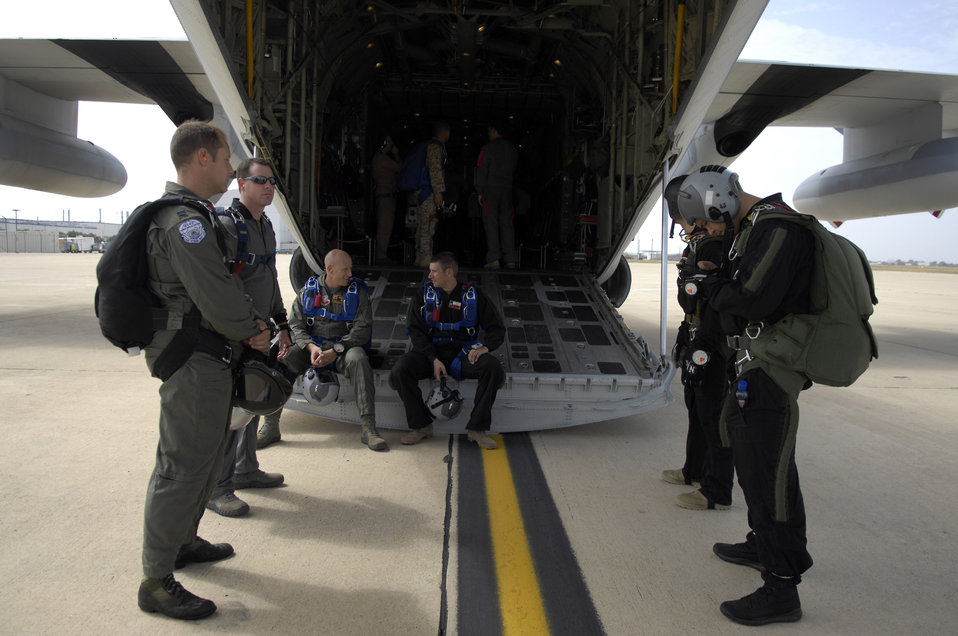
Jump training at Lackland

SERE specialists, Marines, Soldiers and a Royal Air Force exchange officer get ready to board a Marine C-130 for competency airborne training July 23 over Lackland Air Force Base, Texas. Aircrew and aircraft are from the Marine Aerial Refueler Transport Squadron 234 at Joint Reserve Base/Naval Station Fort Worth, Texas.